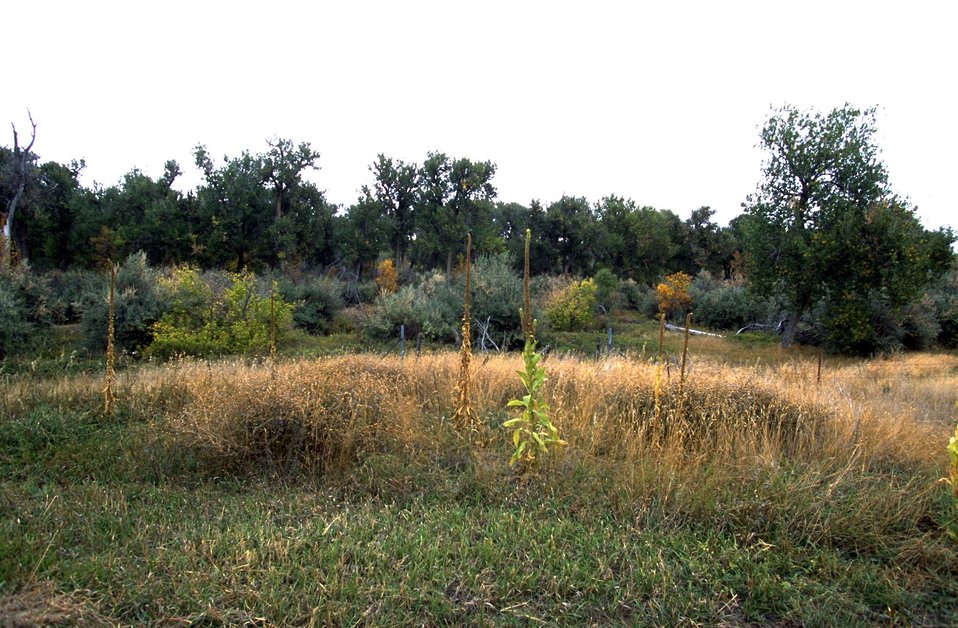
Vegetation at the Howrey Island Recreation Area